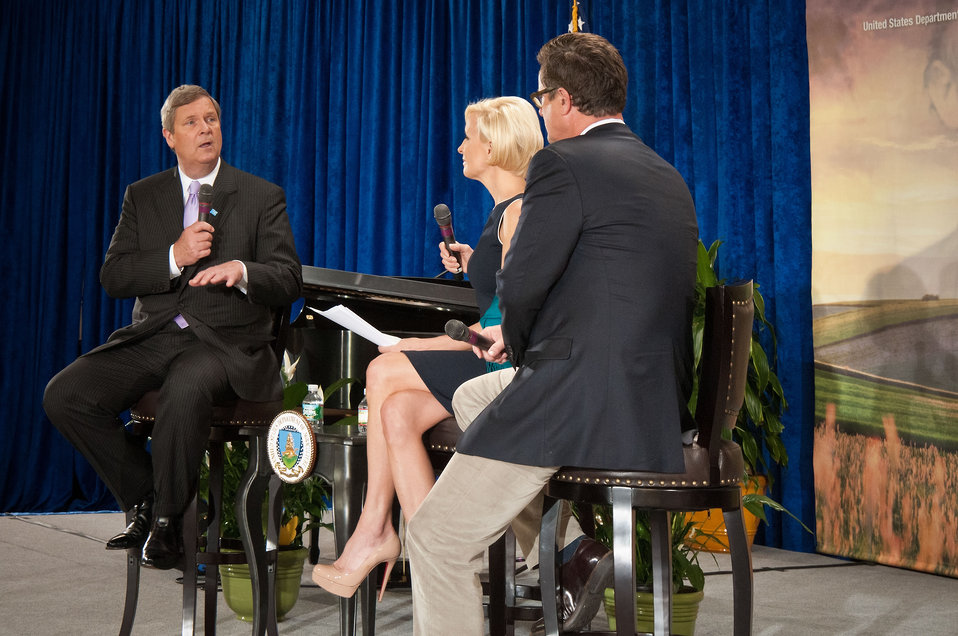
From left Agriculture Secretary Tom Vilsack, Mika Brzezinski and Former Congressman Joe Scarborough (R-Fla.) hosts of MSNBC’s “Morning Joe and Masters of Ceremony listen to Secretary Vilsack explain the history and importance of American agriculture to not only this country but to the world at the United States Department of Agriculture’s 150th Anniversary celebration in Washington, D.C., on Tuesday, May 15, 2012. On May 15, 1862 President Abraham Lincoln signed into law an act of Congress establishing the U.S. Department of Agriculture. Over the next two months - in the midst of the Civil War - he signed additional legislation that expanded and transformed American farming, including the Homestead Act, and the establishment of the Land Grant agricultural university system. President Lincoln referred to the Agriculture Department as the “People’s Department”. President Lincoln knew the importance of agriculture to our prosperity – particularly at a time when about half of all Americans lived on the farm. Today that number stands at about 2 percent. Our values are still rooted in rural America. As the United States has changed and evolved over the years, at USDA we have not lost sight of Lincoln’s vision. Through our work on food, agriculture, economic development, science, natural resource conservation and a host of other issues, USDA has impacted the lives of generations of Americans. Today, USDA truly remains a “Peoples’ Department” that touches the life of every American. People depend on us and USDA is committed to leveraging the efforts of our Department and more than 100,000 hardworking USDA employees to continue creating jobs, supporting rural communities and helping our country prosper.